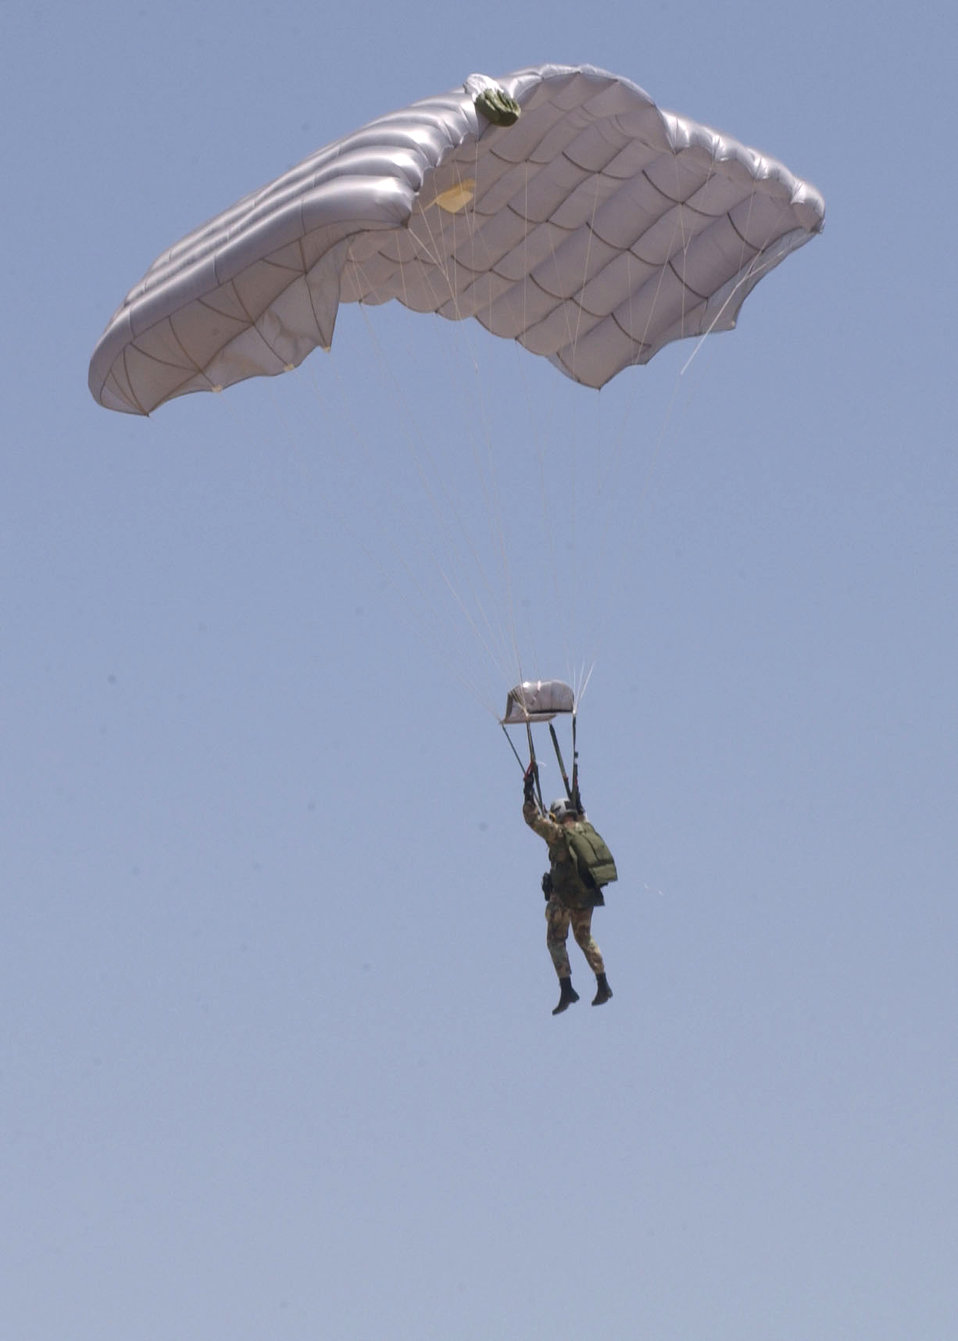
Enjoying the ride

DAVIS-MONTHAN AIR FORCE BASE, Ariz. -- A pararescueman from the 306th Rescue Squadron performs a high-altitude low-opening parachute jump during training here.